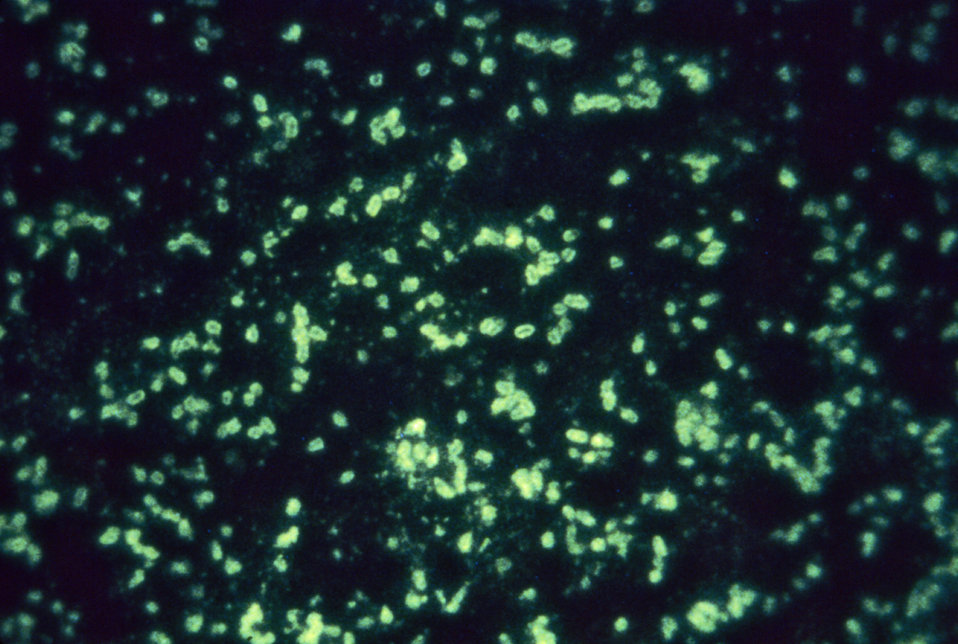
This micrograph was stained using a fluorescent antibody staining technique (FA), which uses the specific conjugated antiserum to Fraction 1 (F1) antigen of Yersinia pestis to identify the antigens present in animal tissues, and appropriate cultures.